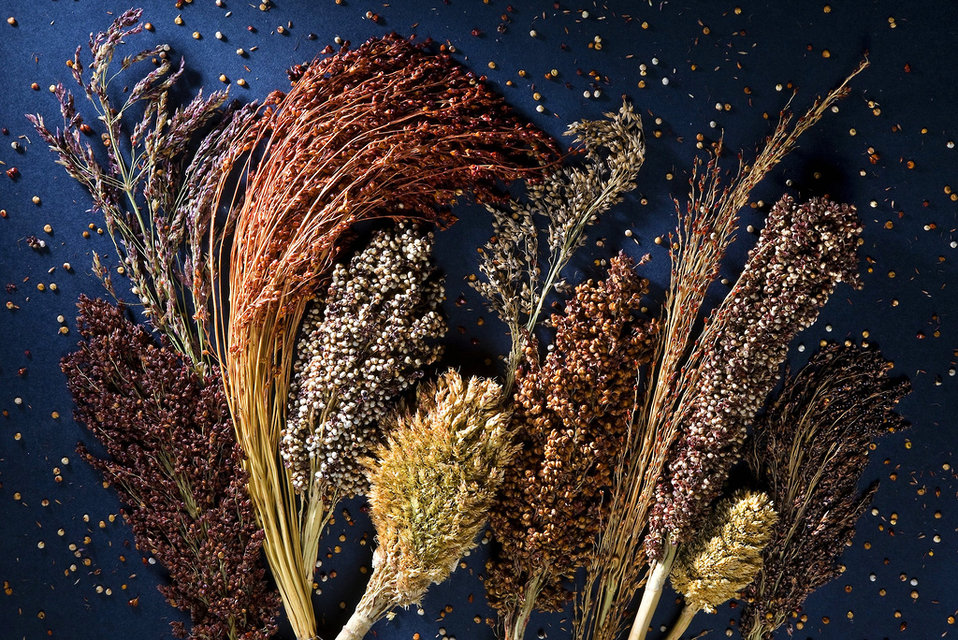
Sorghum